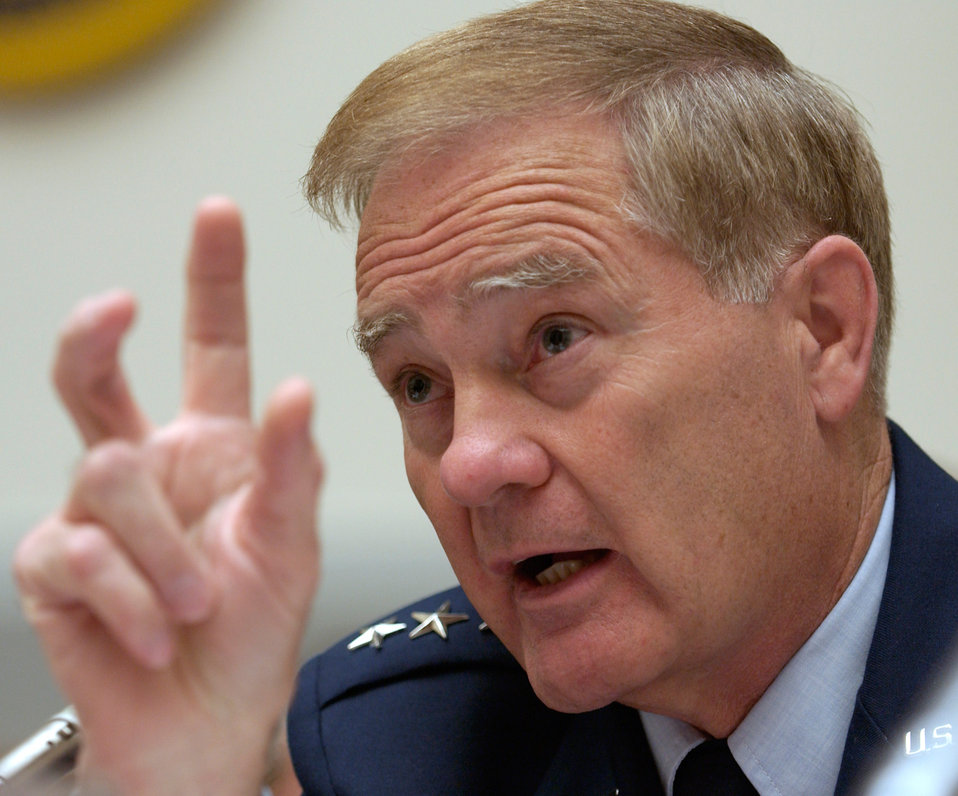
JSF under attack on Capitol Hill

WASHINGTON -- Lt. Gen. Ronald E. Keys answers questions about the state of the F/A-22 and Joint Strike Fighter programs during a hearing of the House Armed Services Committee subcommittee on tactical air and land forces March 25. He is the deputy chief of staff for air and space operations.